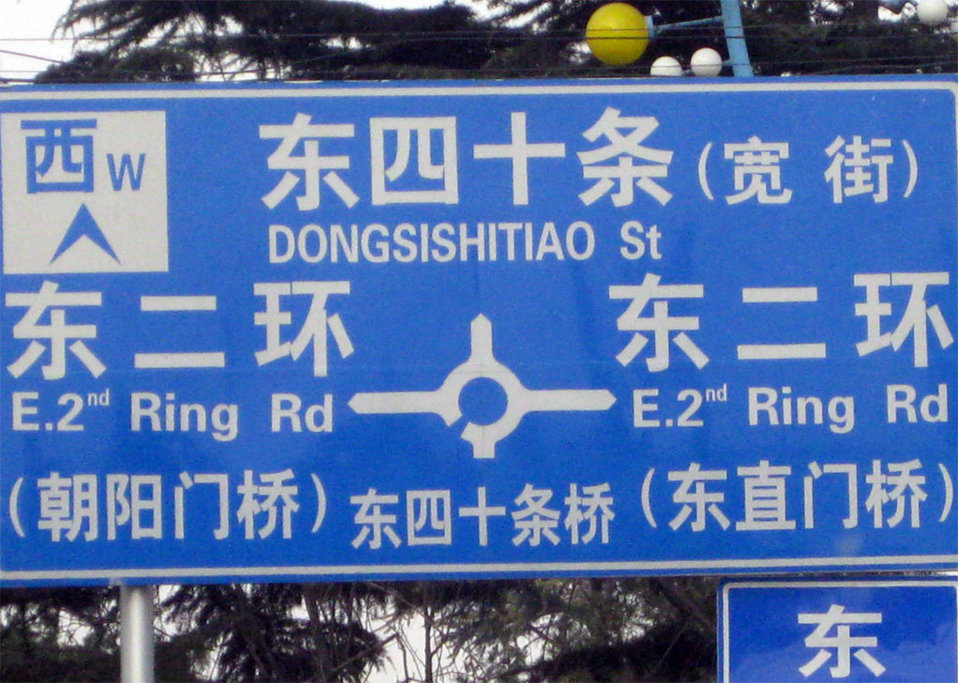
Beijing Street Sign

Behind the Scenes: A street sign along the route to the Diaoyutai State Guesthouse in Beijing, China February 20, 2009.